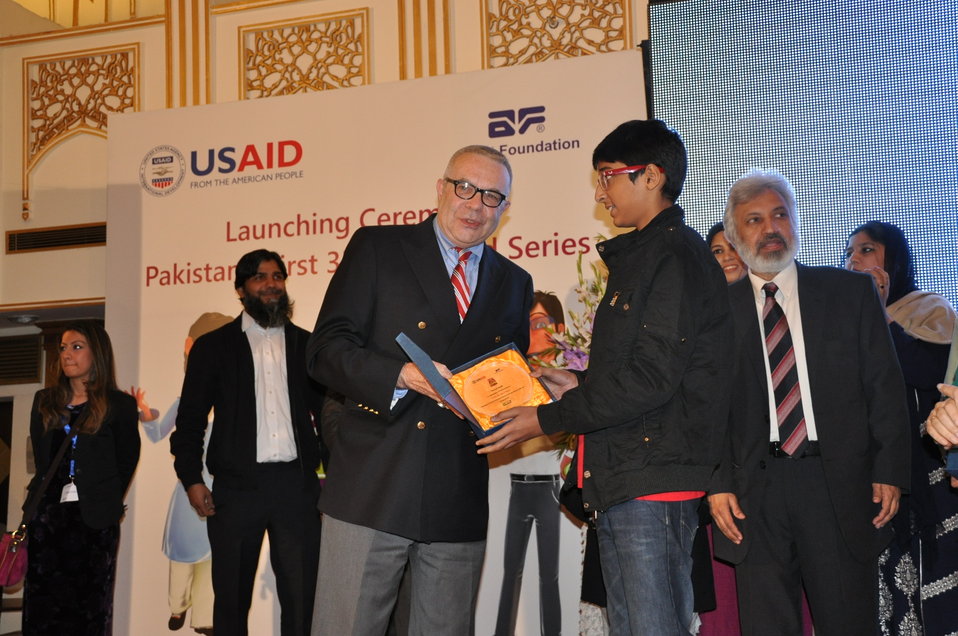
U.S. Deputy Chief of Mission Ambassador Richard Hoagland presenting memento to an attendee